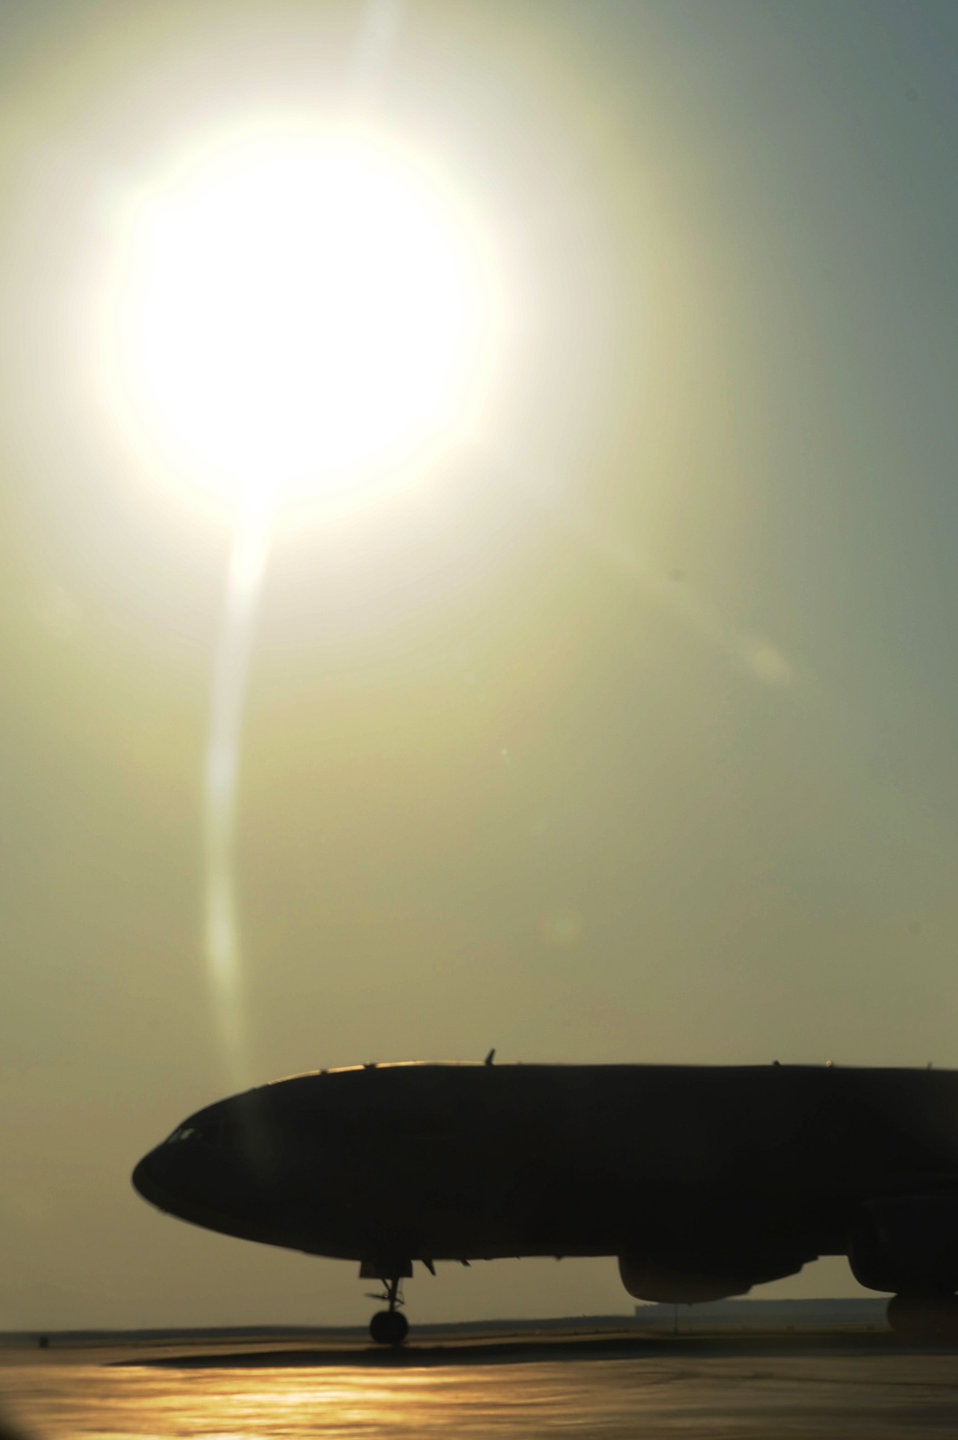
Under the desert sun

A KC-10 Extender returns from a combat air refueling mission at an air base in Southwest Asia Jan. 6, 2010. The KC-10 is assigned to the 908th Expeditionary Air Refueling Squadron and is an Air Mobility Command tanker deployed to the U.S. Central Command area of responsibility.